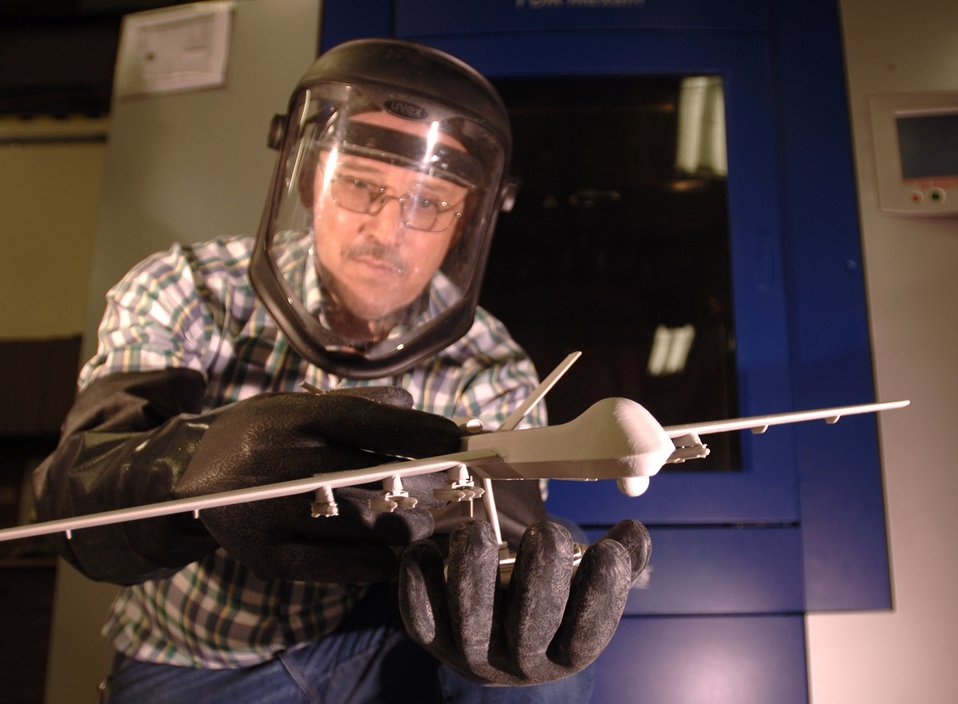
Flight builds training replicas, saves money

Bud Schmidt holds a model of an unmanned aerial vehicle created by the Fused Deposition Modeler at Sheppard Air Force Base, Texas, on Wednesday, July 19. The modeler creates 3-D, solid models using polycarbonate, synthetic plastic, wax and other materials to build durable, fully functional trainers that can range from an aircraft engine or landing gear to a mold of teeth. Mr. Schmidt is a fabrication supervisor for the 982nd Maintenance Squadron.